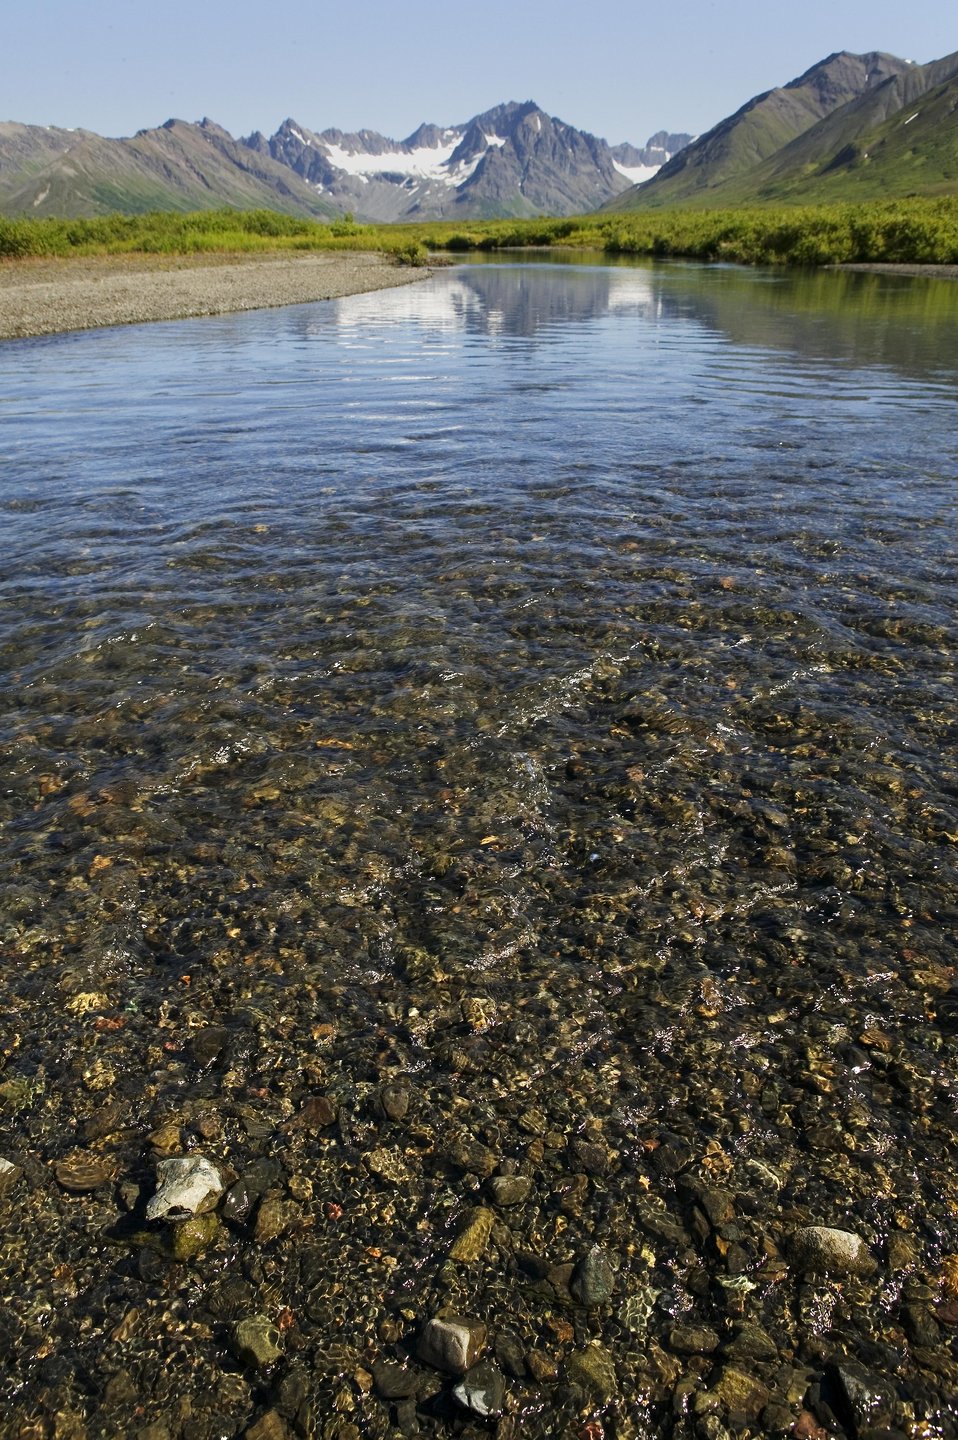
Togiak National Wildlife Refuge